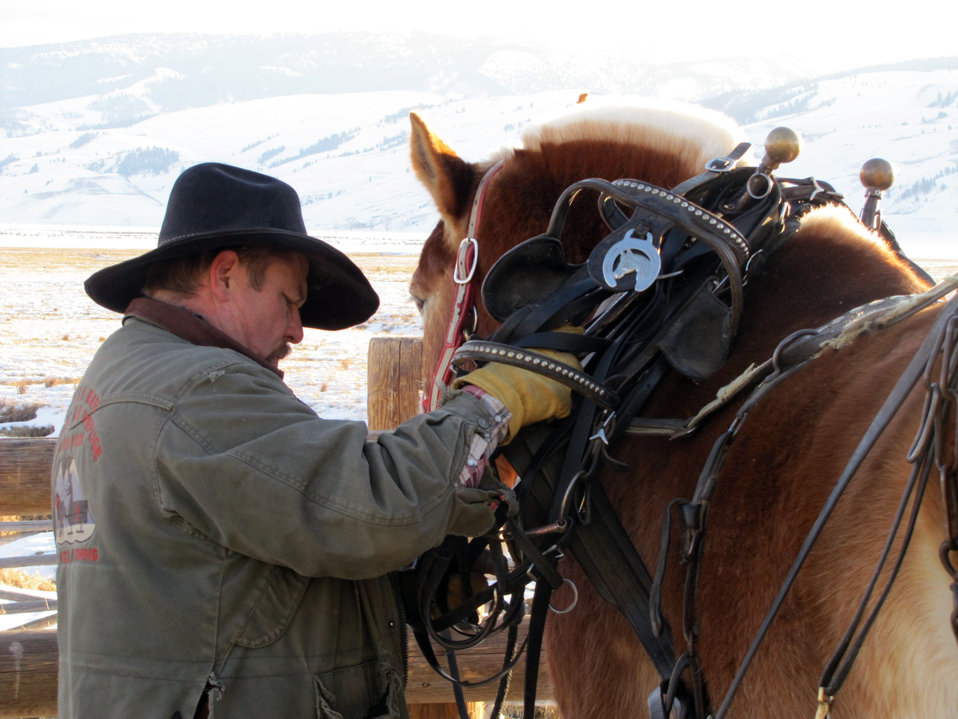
Getting Dressed

It takes several minutes per horse to get them geared up for the day.

Credit: Lori iverson / USFWS